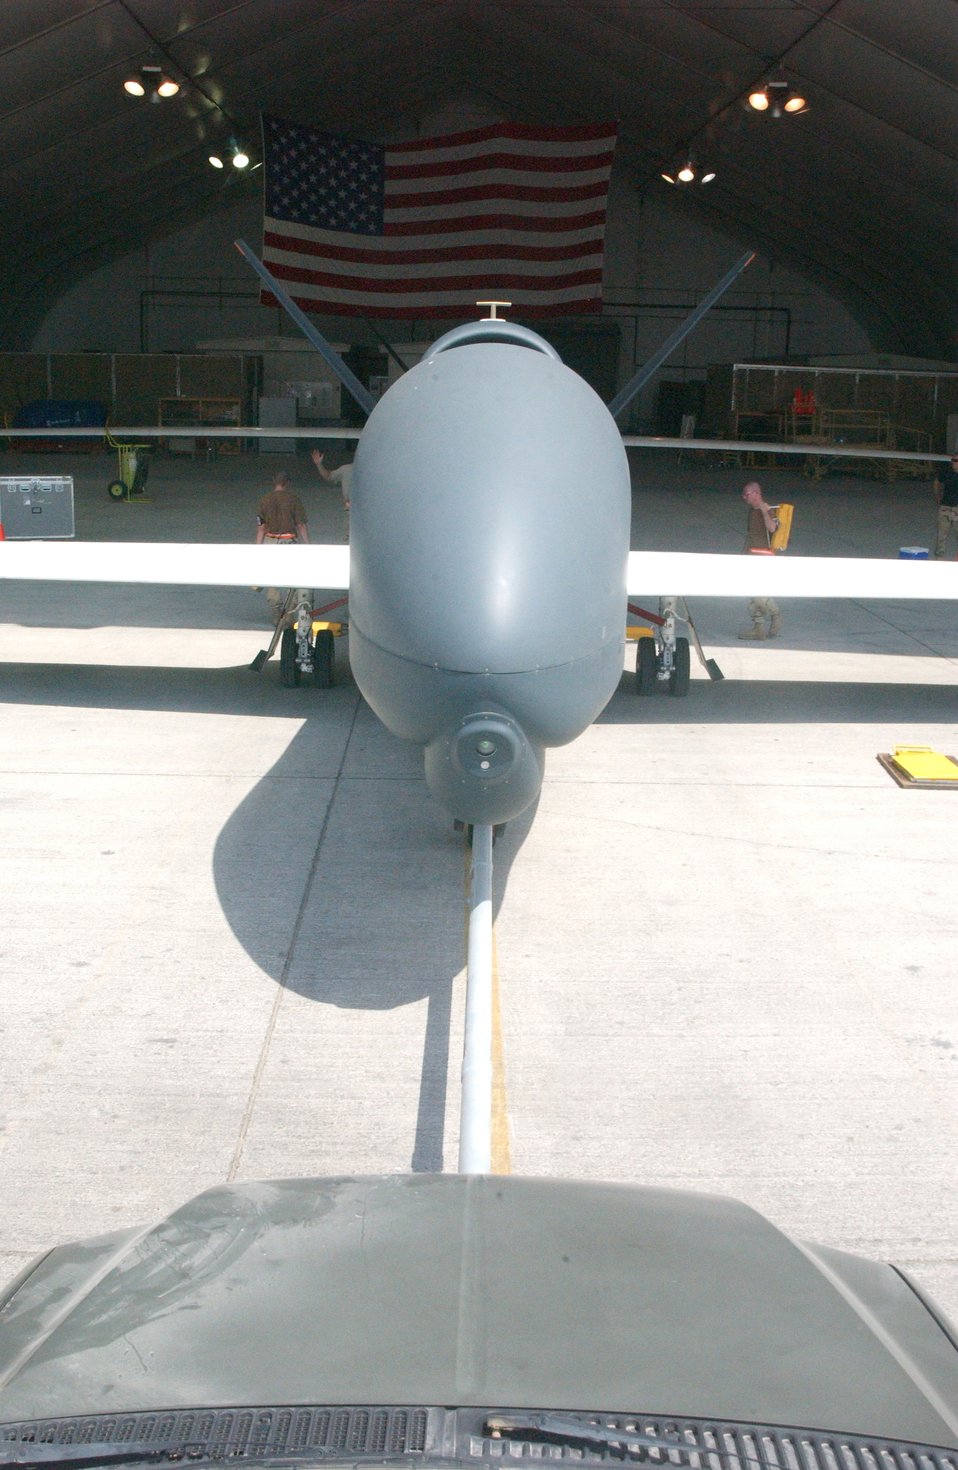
Global Hawk, global mission

Crews from the 12th Expeditionary Reconnaissance Squadron and 380th Expeditionary Maintenance Group push a Global Hawk unmanned aerial vehicle into its hangar after a mission Oct. 3 at a deployed location in Southwest Asia. The Global Hawk provides Air Force and joint battlefield commanders near-real-time, high-resolution, intelligence, surveillance and reconnaissance imagery.